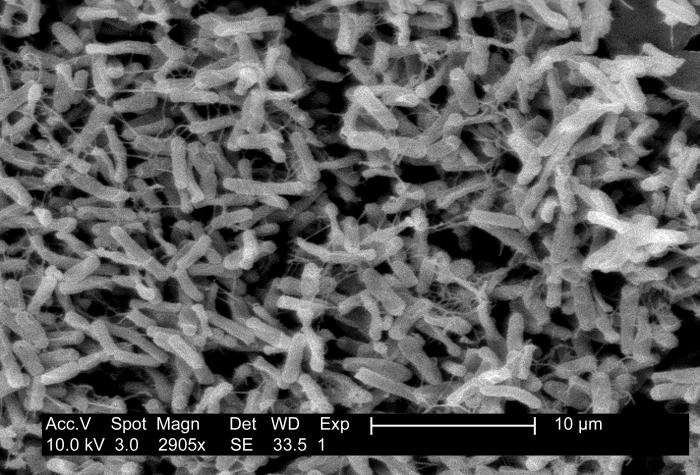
This micrograph depicts Gram-positive C. difficile bacteria from a stool sample obtained using a .1�m filter.